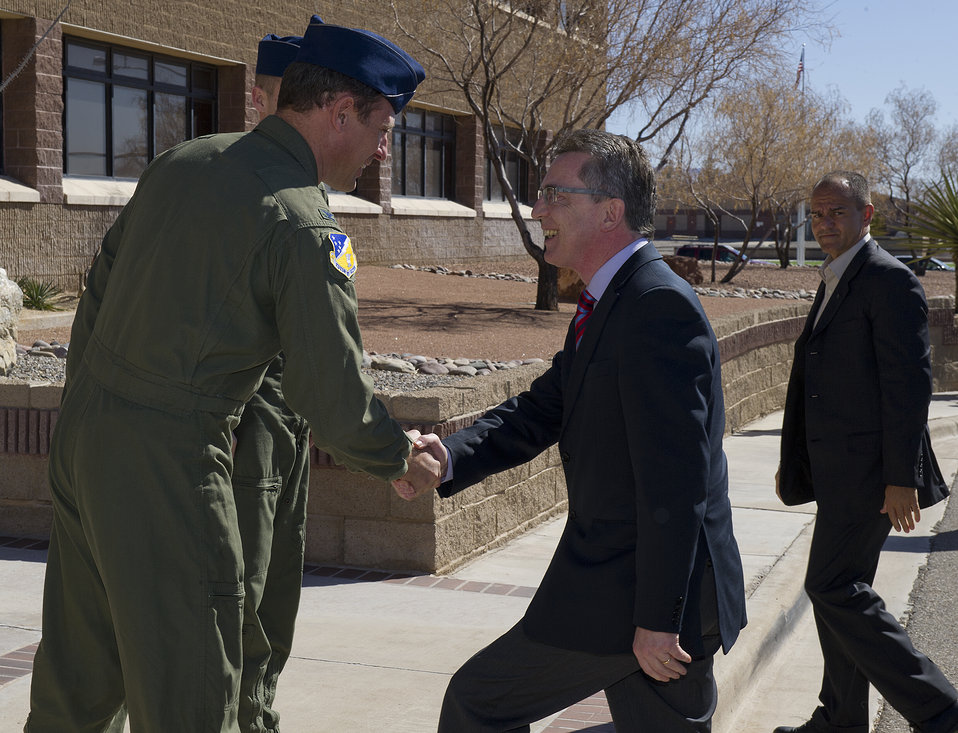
German defense minister visits Holloman AFB

Dr. Thomas de Maiziere, the Germany Federal Minister of Defense, greets U.S. Air Force Col. David Krumm, the 49th Wing commander, at Holloman Air Force Base, N.M., Feb. 15, 2012. The German Air Force has conducted flying operations at Holloman AFB since 1992.